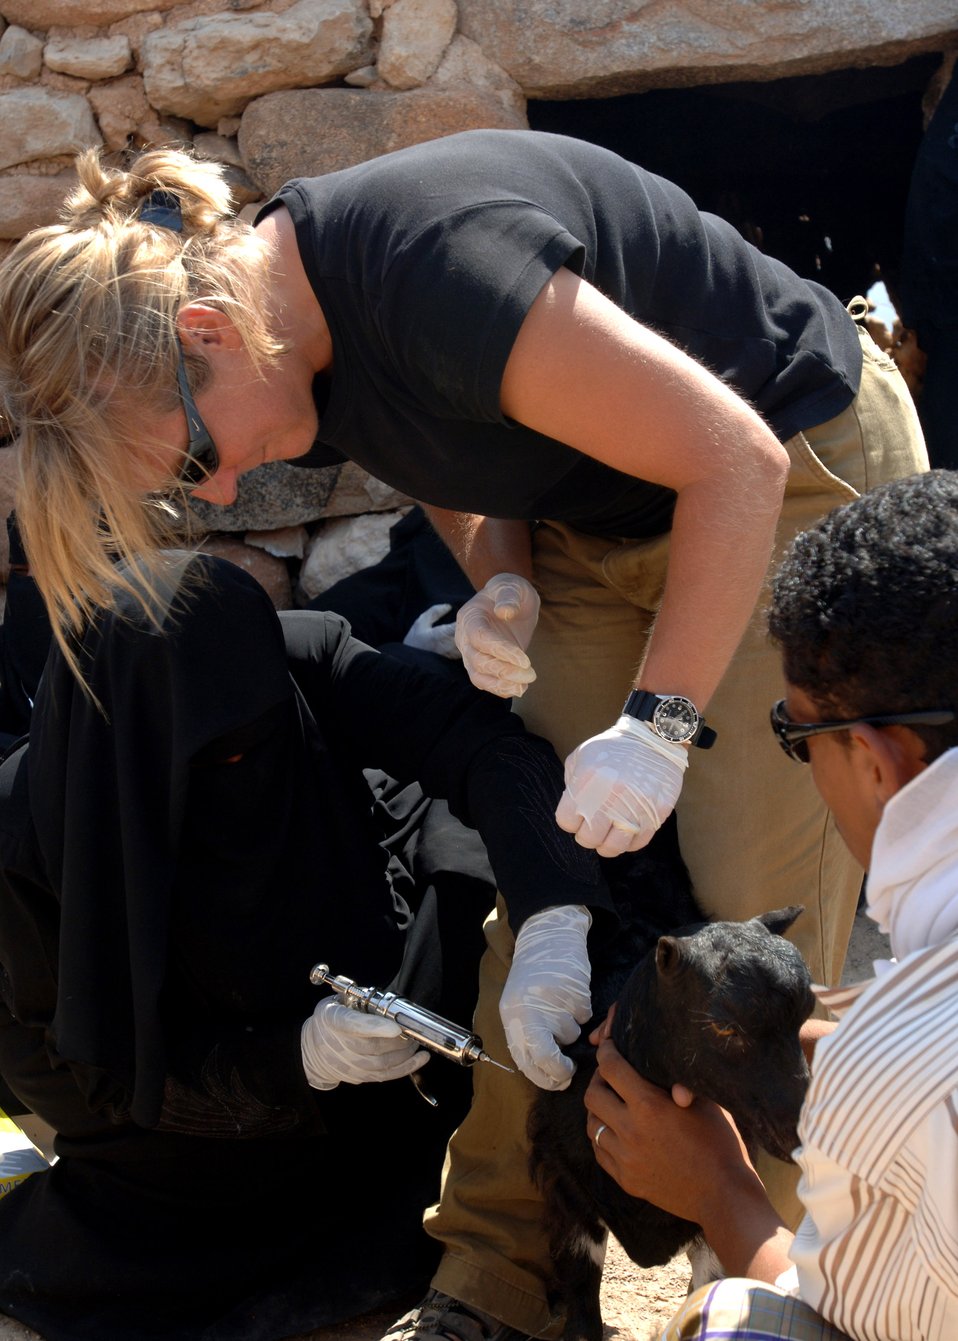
Veterinary project has big impact on small island

U.S. Army Capt. Gwynne Kinley, a doctor of veterinary medicine, helps an animal health worker use an auto injector during a veterinary civic action project on the small island of Socotra. The objective of the project was to teach women on the island basic animal husbandry techniques. Those learned skills will be used to improve the country's overall livestock health and productivity. Captain Kinley is with the Combined Joint Task Force-Horn of Africa.